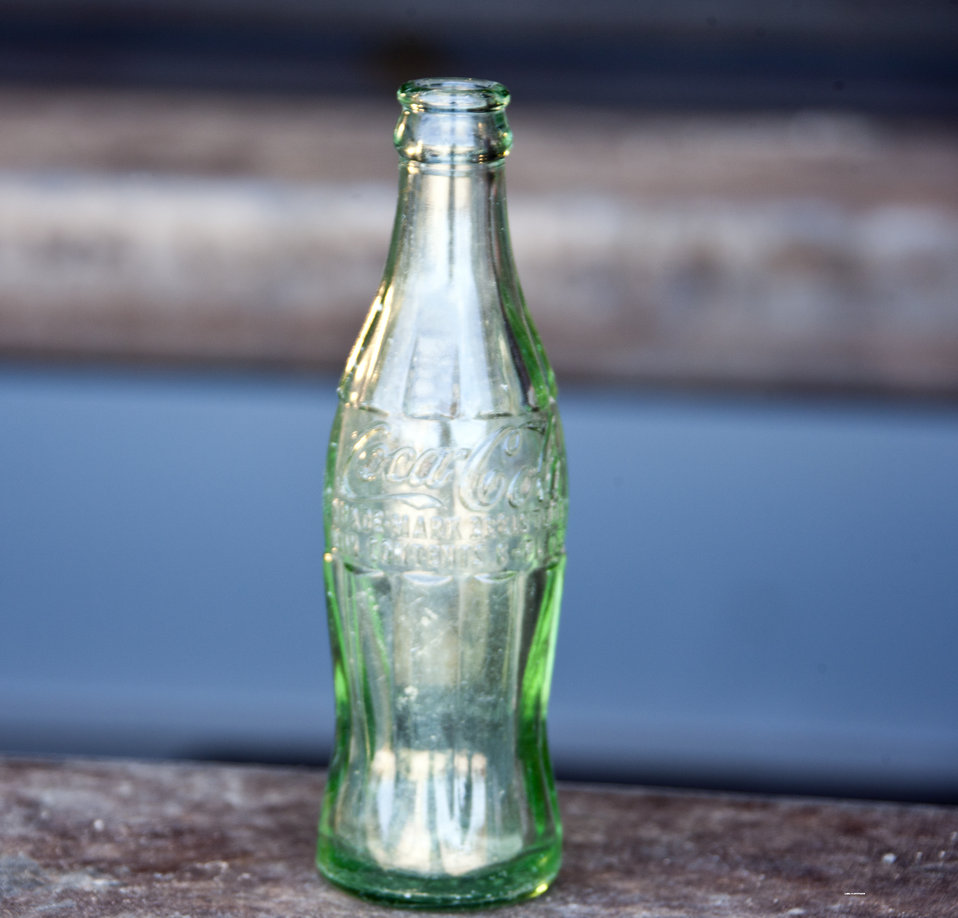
Los Alamos Dig Unveils Items Ranging from Military Trucks to Toothbrush

A Coke bottle was one of the interesting finds.

In a $110 million Recovery Act project at Los Alamos National Laboratory, workers are excavating a waste disposal site known as Material Disposal Area B (MDA-B). Completion of the MDA-B cleanup will reduce EM’s legacy footprint by more than 260,000 square feet.